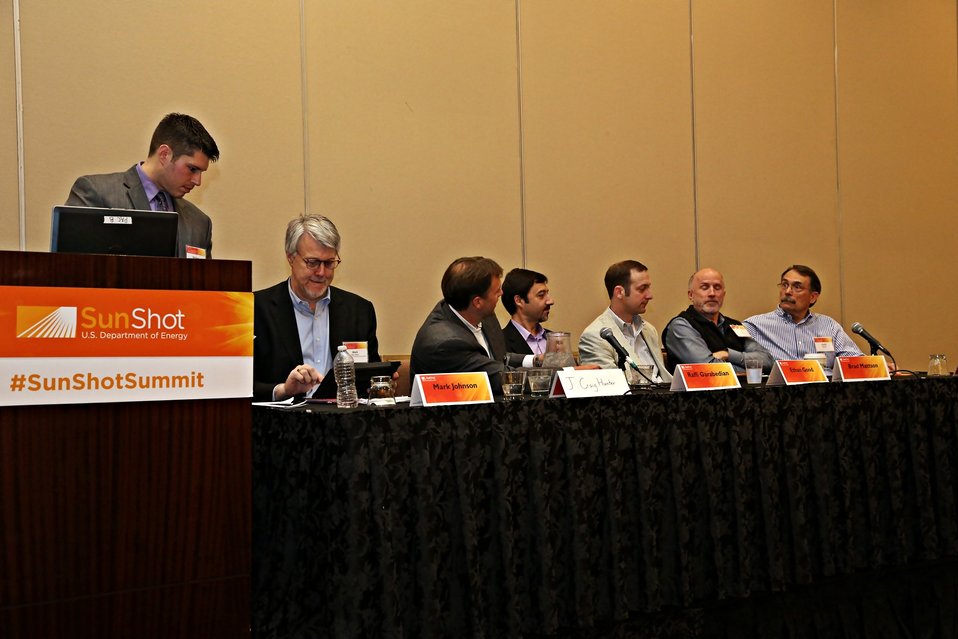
Breakout Sessions 12